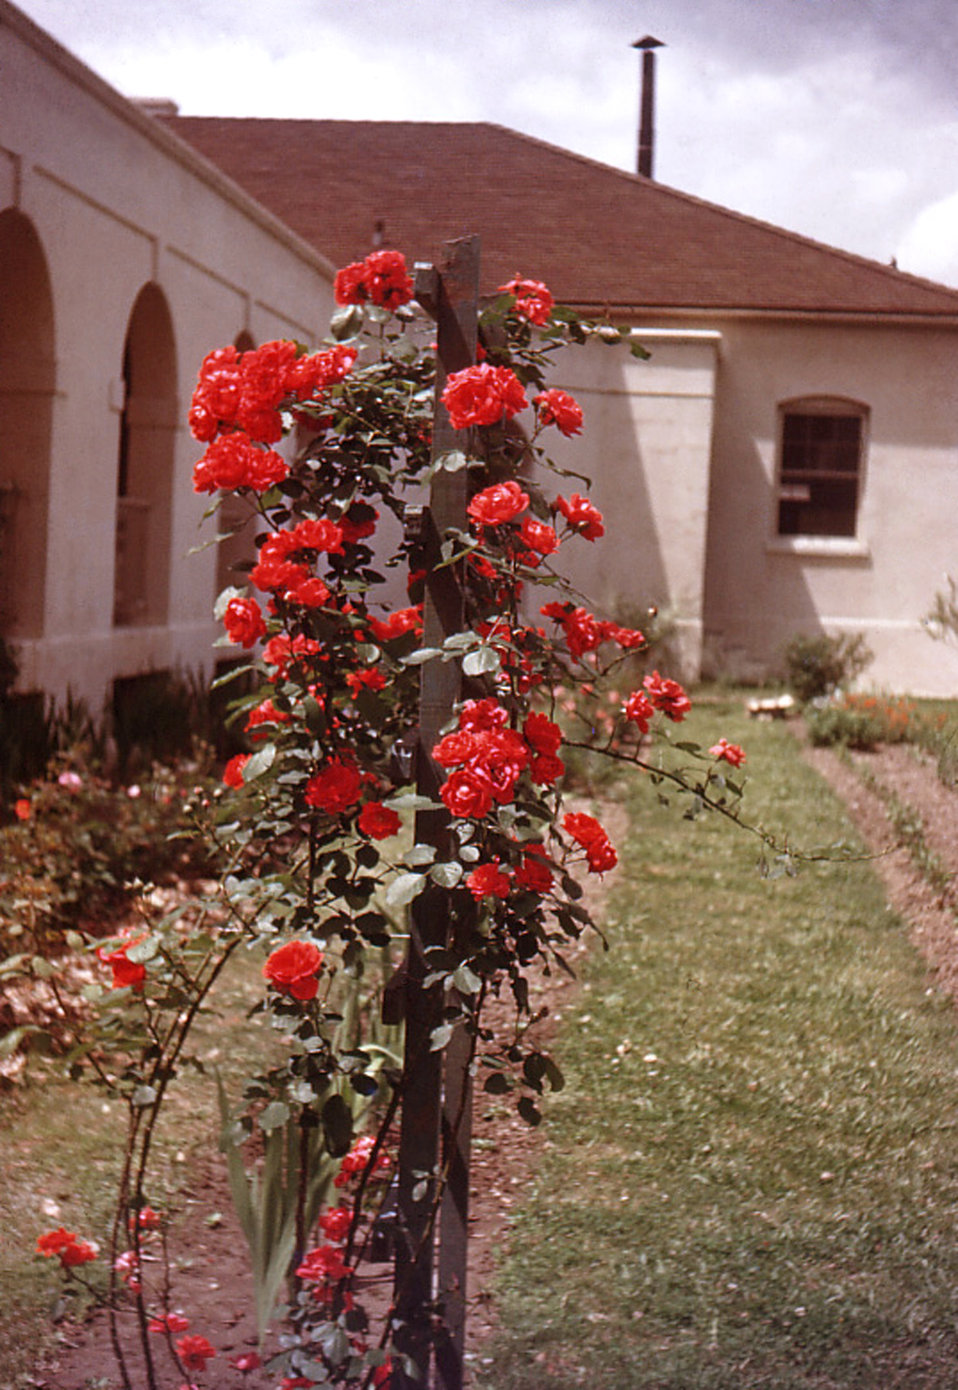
Grown by a Carville, Louisiana Leprosarium patient, this beautiful rosebush produced flowers that not only beautified the hospital's grounds, but the rooms of the leprosarium as well, including the infirmary, and church chapels. There were many wonderful flower gardens, hosting plants of all kinds. Some of the patients had magical green thumbs, to which these magnificent roses surely attest. Being that the patients were for the most part quarantined, and therefore, sequestered from the surrounding society, participation in outdoor activities such gardening were much appreciated.